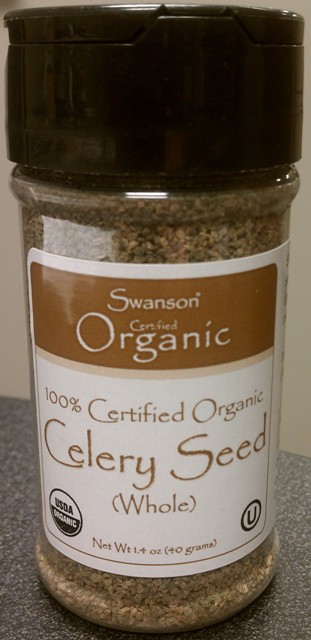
RECALLED - Organic Celery Seed

December 16, 2011 - Product Recall - Swanson Health Products Recalls Swanson Organic Celery Seed.